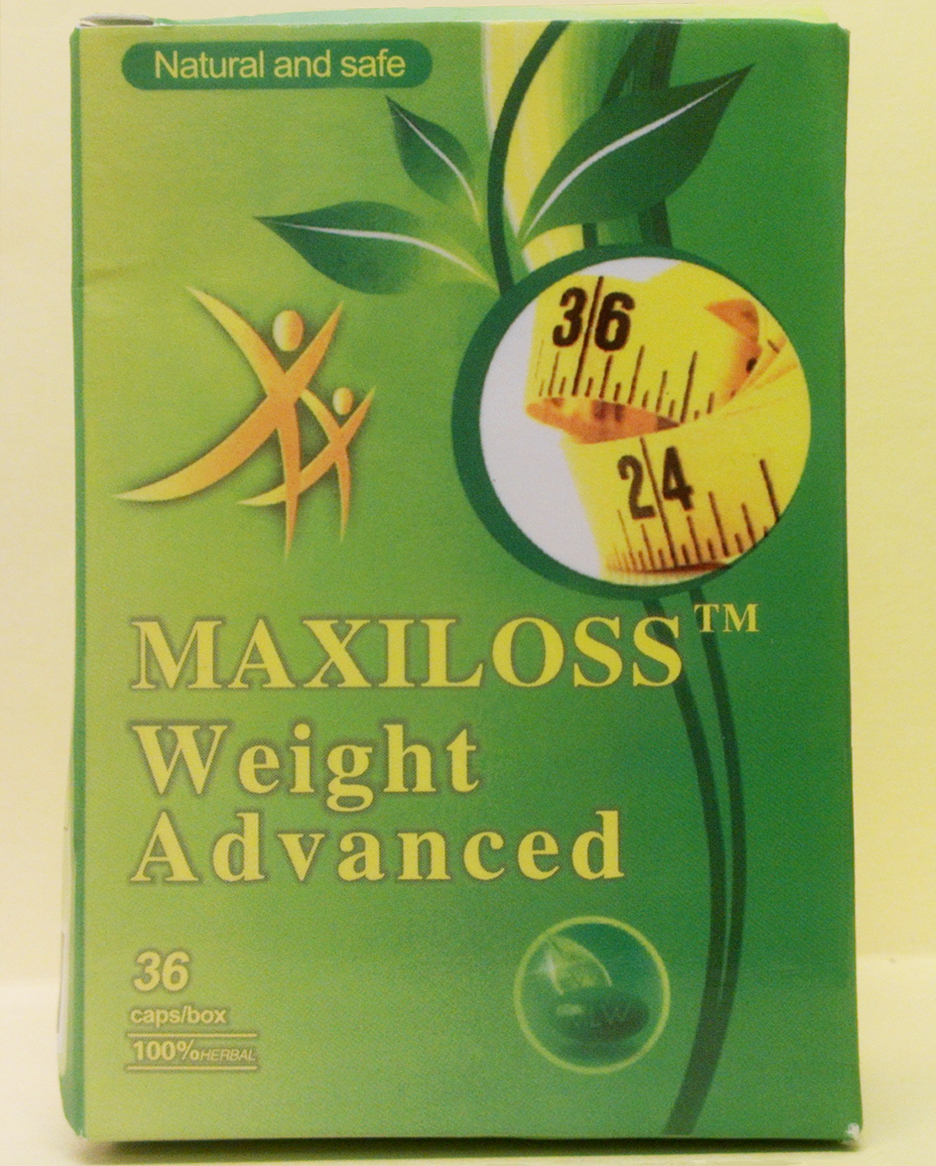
MAXILOSS Weight Advanced

January 8, 2013 - The FDA is advising consumers not to purchase or use 'MAXILOSS Weight Advanced,' a product promoted and sold for weight loss. The product was found to contain undeclared sibutramine. For more information, go to www.fda.gov/Drugs/ResourcesForYou/Consumers/BuyingUsingMe....

And read this Consumer Update: Beware of Fraudulent ‘Dietary Supplements’